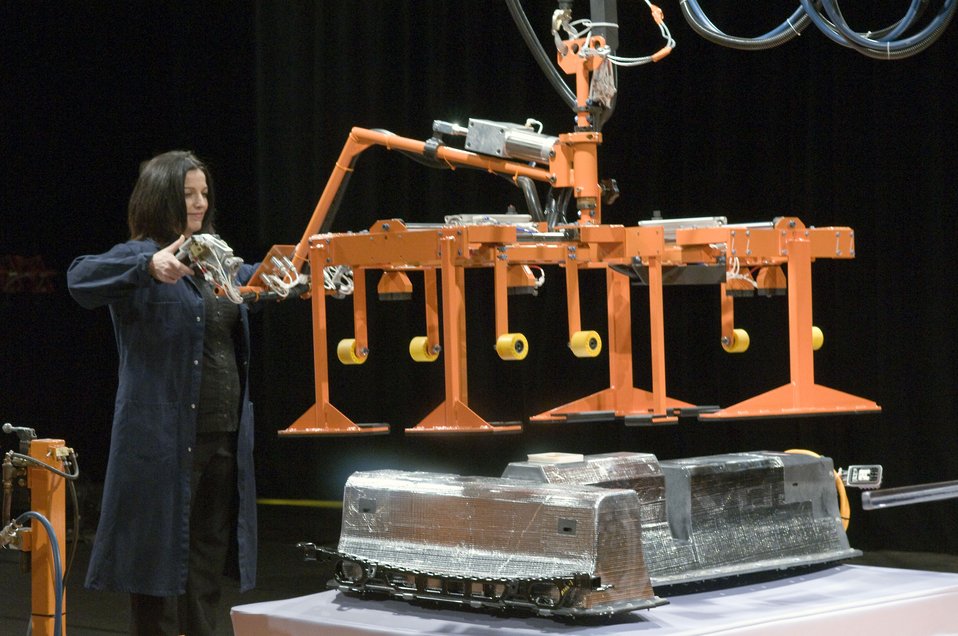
ChevyVoltFirstBattery06

General Motors Brownstown Battery Plant Operations Manager Marisol McCormick delivers the first Chevrolet Volt battery off the assembly line at the GM Brownstown Battery plant in Brownstown Township, Michigan Thursday, January 7, 2010. The facility is the first lithium ion battery pack manufacturing plant in the U.S. operated by a major automaker.